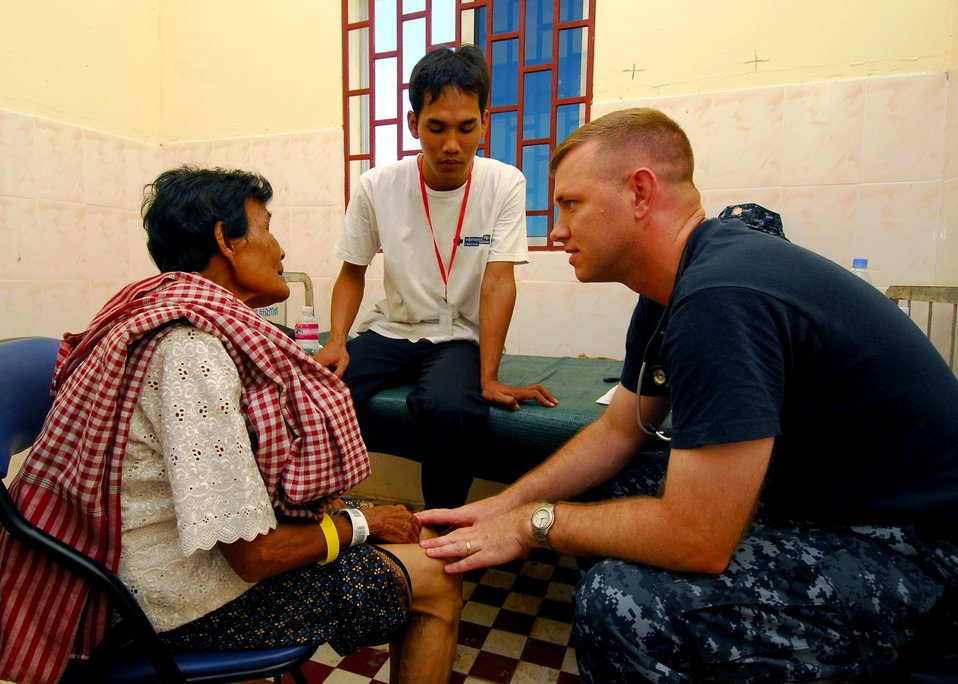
Lt. Cmdr. (Dr.) Kevin Groszkowski Informs a Cambodian Patient

Lt. Cmdr. (Dr.) Kevin Groszkowski informs a patient that she has arthritis during a medical community service event at Veal Ang Popel Clinic, in support of Pacific Partnership 2010, while the Military Sealift Command hospital ship USNS Mercy (T-AH 19) is in Kampong Spue, Cambodia, on June 25, 2010.